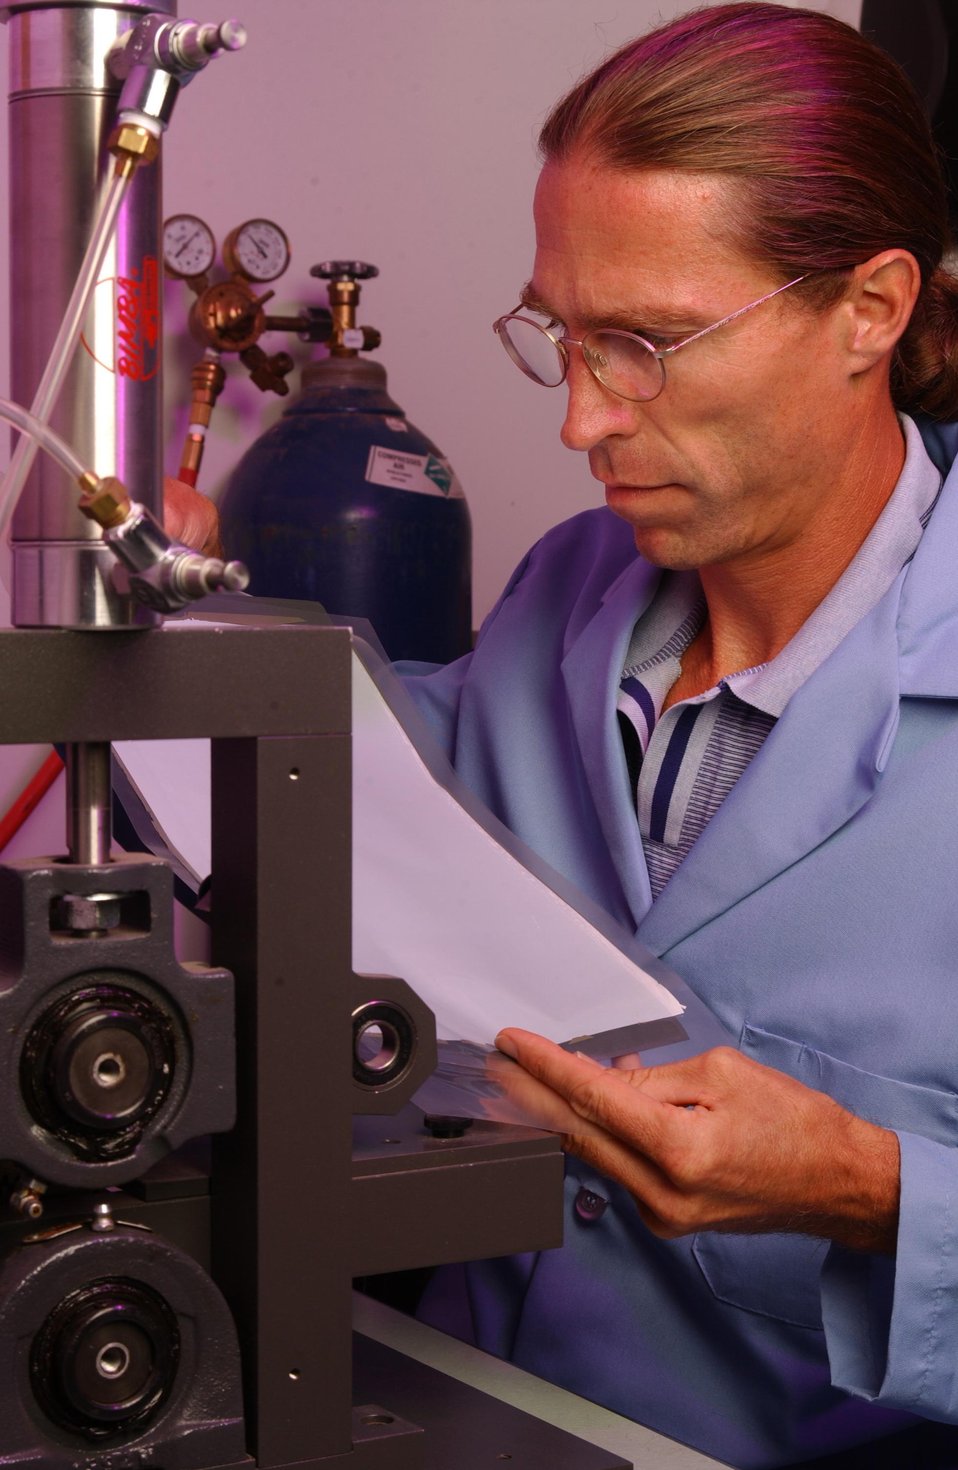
IN THE APPLIED PROCESS ENGINEERING LABORATORY AT PNNL, A RESEARCHER PREPARES A SYSTEM THAT LAMINATES MATERIALS TO CREATE SOLID OXIDE FUEL CELLS (SOFC).

THE LAMINATION PROCESS MAKES POSSIBLE MULTILAYER STRUCTURES, SUCH AS THE ANODE-SUPPORTED SOFC, TO BE CREATED FROM THIN FLEXIBLE TAPES.